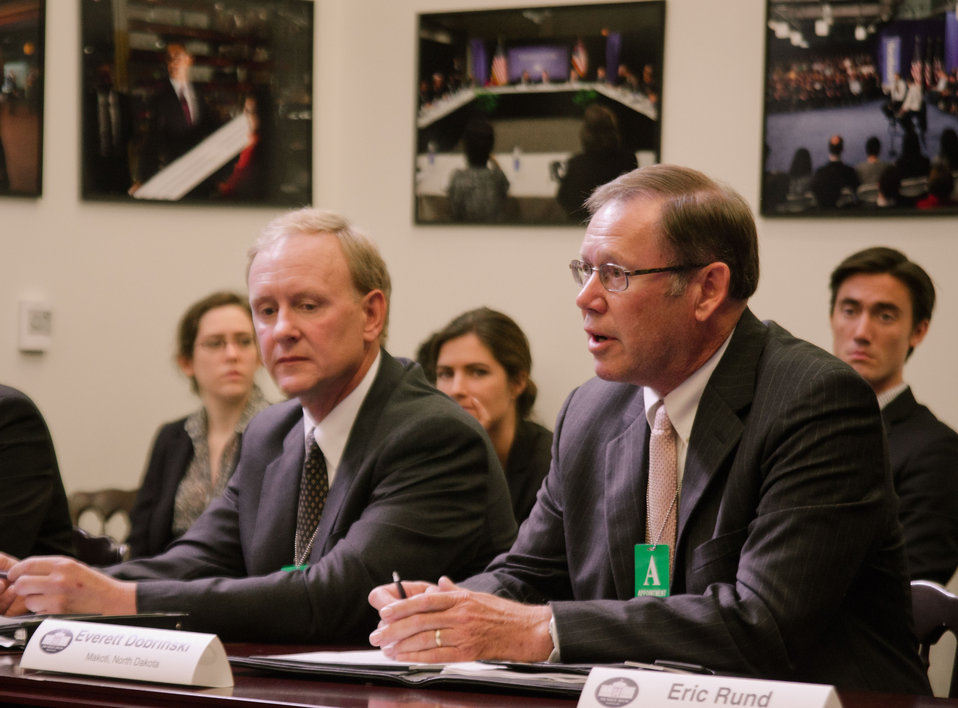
Everett Dobrinski (at table, wearing glasses), CoBANK, North Dakota, attended a meeting at the White House, in Washington, DC, on July 6, 2011. He was asked to participate along with President Barack Obama, Agriculture Secretary Tom Vilsack, the President's Domestic Policy Adviser Melody Barnes and rural communities leaders from across the country for the White House Rural Champions of Change event to strengthen rural communities and promote economic growth. Farming all his life in ND, taught high school while farming for a few years, full-time farmer now. He is a leader in co-operatives with farming. Now is a board chairman of CoBank that is a farm credit bank, which lends to rural electric, water, and telephone. Also lends to farm credit associations. Most co-ops only lend to farm credit associations but CoBank also does direct loans. Lends through USDA, especially to start-up coops, like ethanol. Also serves on rural electric co-operative board.